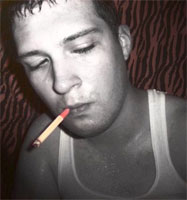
A picture of me, for my own profile